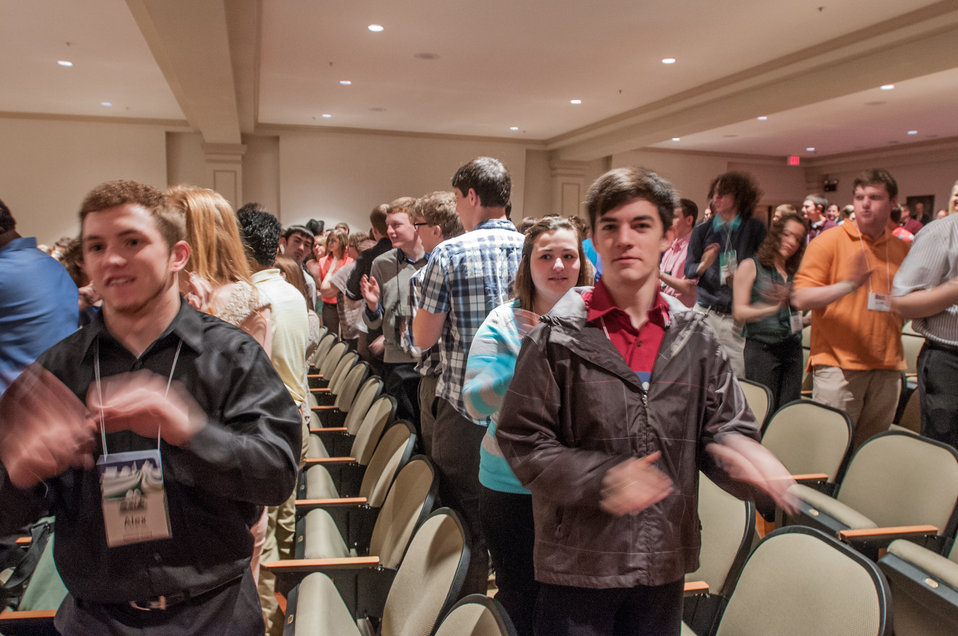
The 4-H youth members, Extension Educators and 4-H Adult Volunteers from across the nation, as well as U.S. Territories, do a dance to pump up the energy before the start of the 2013 National 4-H Conference, on Monday, April 8, 2013 in Chevy Chase, MD. The youth delegates are in grades 10-12 (15-19 years old). The purpose of the conference is to 1) engage 4-H youth in personal development experiences that will increase knowledge, resources, and skills; 2) discuss topics affecting youth and 4-H programming nationwide; and 3) empower and mobilize 4-H youth to create positive social change in their communities in a meaningful and genuine way. The conference also reinforces the rich history of 4-H and its valuable tie to USDA, Cooperative Extension and the Land-Grant University System.